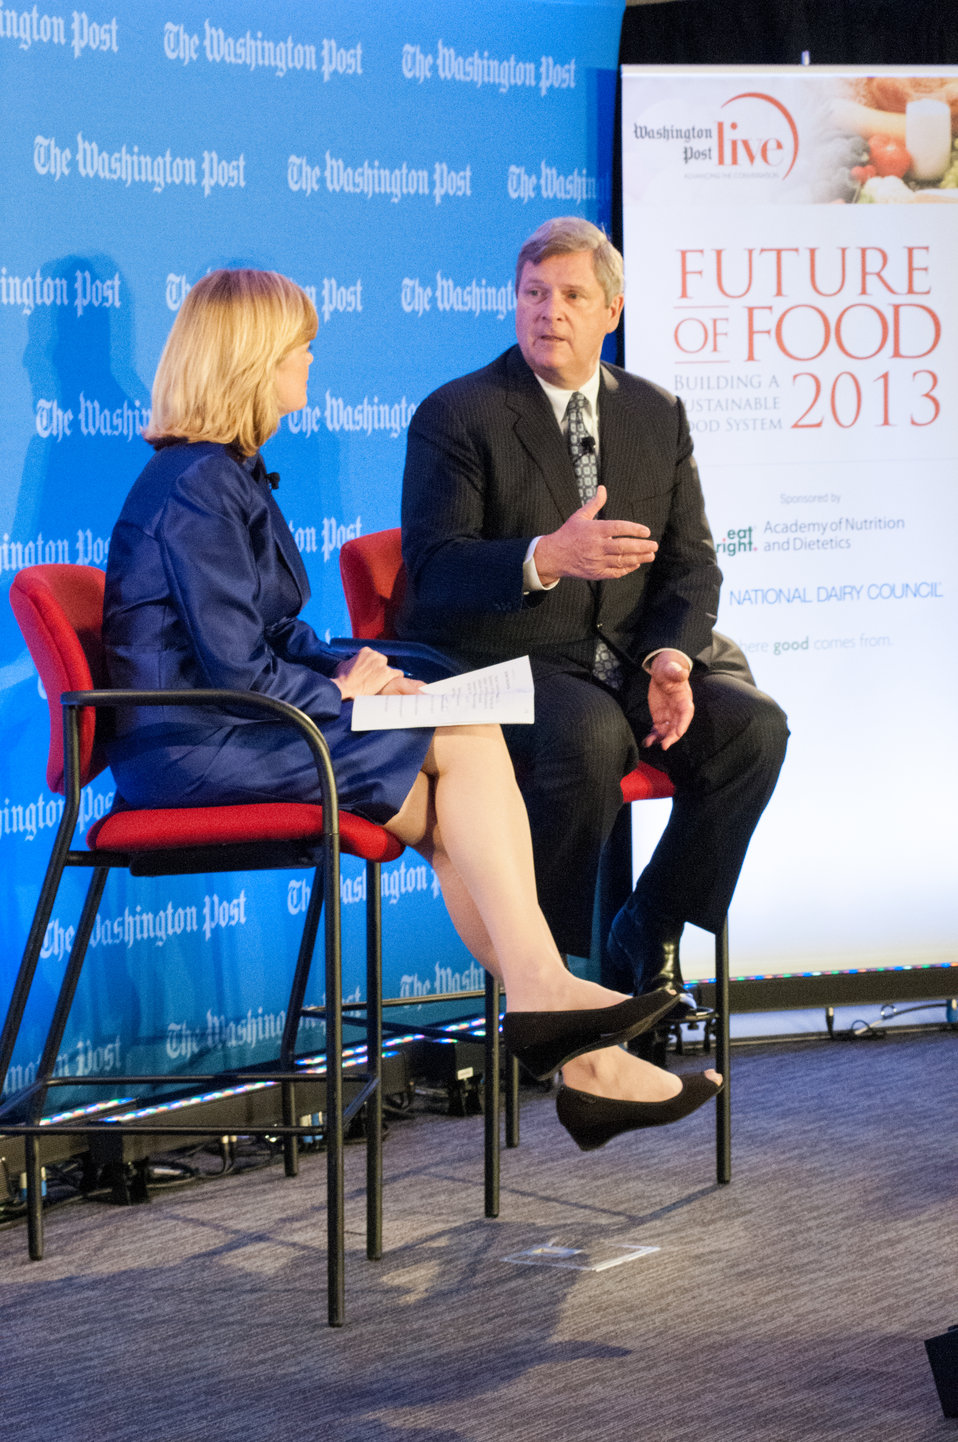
Washington Post Live Editor Mary Jordan Live and Agriculture Secretary Tom Vilsack along with leading agricultural and nutrition experts discuss expanding healthy, sustainable food systems during the annual live forum, “Future of Food: Building a Sustainable Food System 2013,” sponsored by the Washington Post in Washington, D.C. on Wednesday, May 22, 2013. The discussion included public-private partnerships, the market’s role in nutrition and the future of agricultural innovation.